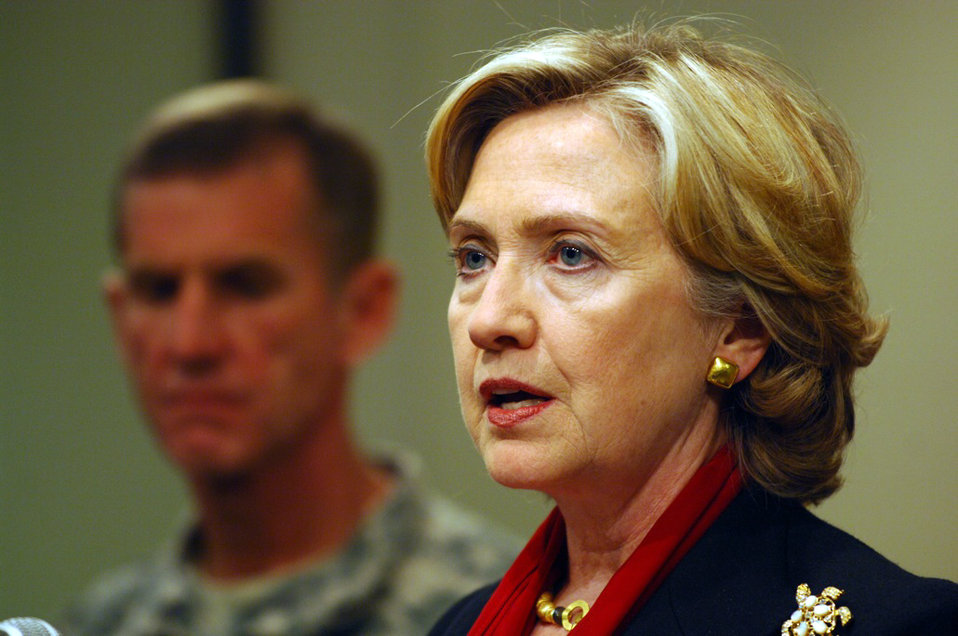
Secretary Clinton Travels to Afghanistan

U.S. Secretary of State Hillary Rodham Clinton holds a press conference at the U.S. Embassy in Kabul, Afghanistan November 19, 2009. Secretary Clinton traveled to Afghanistan to attend President Hamid Karzai's November 19, 2009 inauguration ceremony, meet with Afghanistan's leadership, international partners and allies, U.S. troops, staff in Provincial Reconstruction Teams, and Embassy staff.